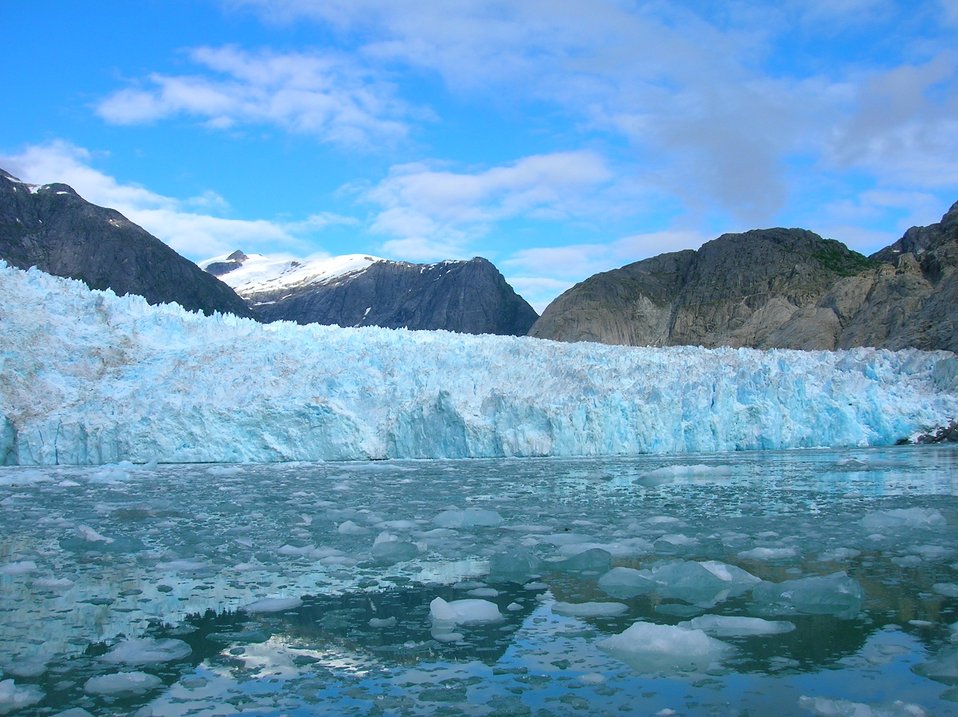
The face of LeConte Glacier